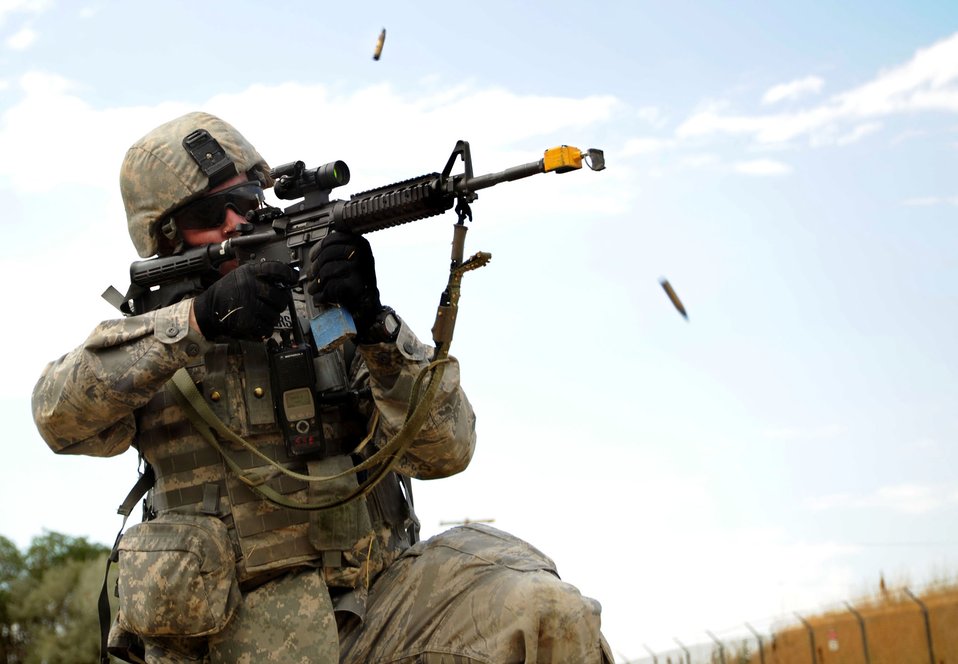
Security Forces Airmen take part in combat skills training

Senior Airman Aaron Davis fires at an 'enemy' while participating in a 7-day combat skills training course Aug. 27, 2010, at Hill Air Force Base, Utah. Airman Davis is a security forces member with the 75th Security Forces Squadron.